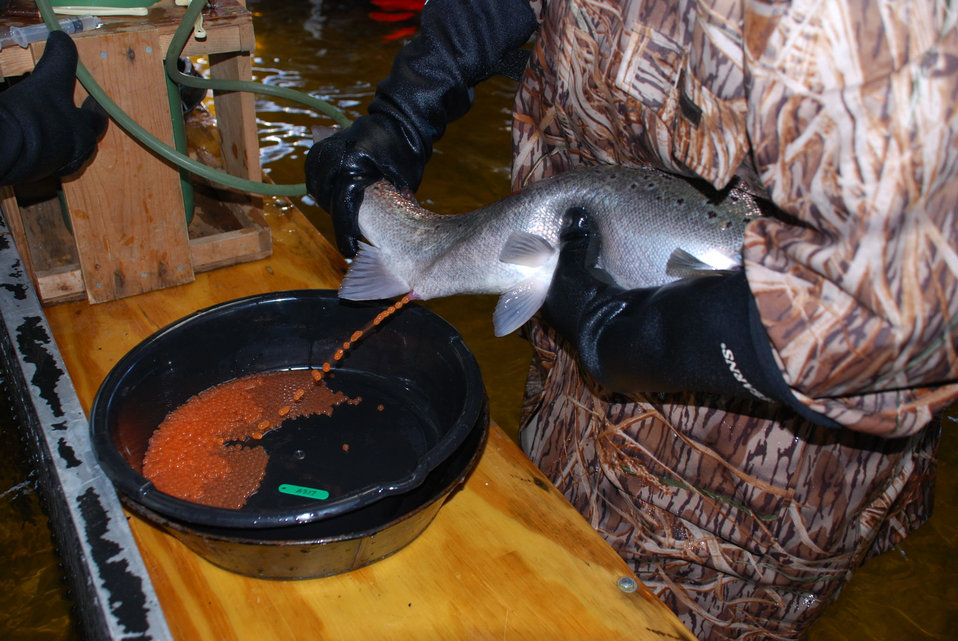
Hand spawn method for Atlantic salmon

Hand spawning Atlantic salmon at the Maine Fisheries Resource Office.